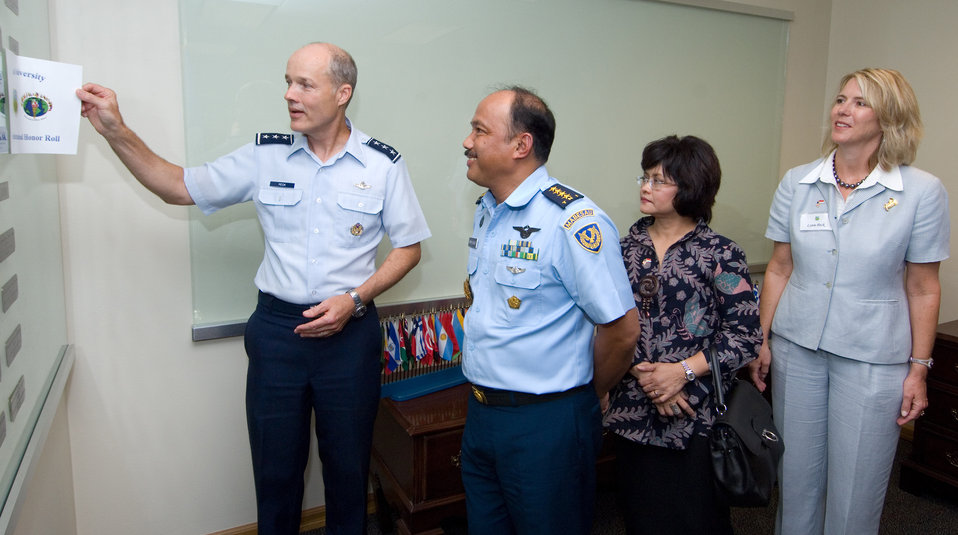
Air University inducts Indonesian air force chief into international honor roll

Air Chief Marshal Imam Sufaat, Chief of Staff, Indonesian Air Force, counterpart of Chief of Staff of the Air Force General Norton Schwartz, to be inducted into the International Officer School's International Honor Roll on Monday, July 12, 2010.